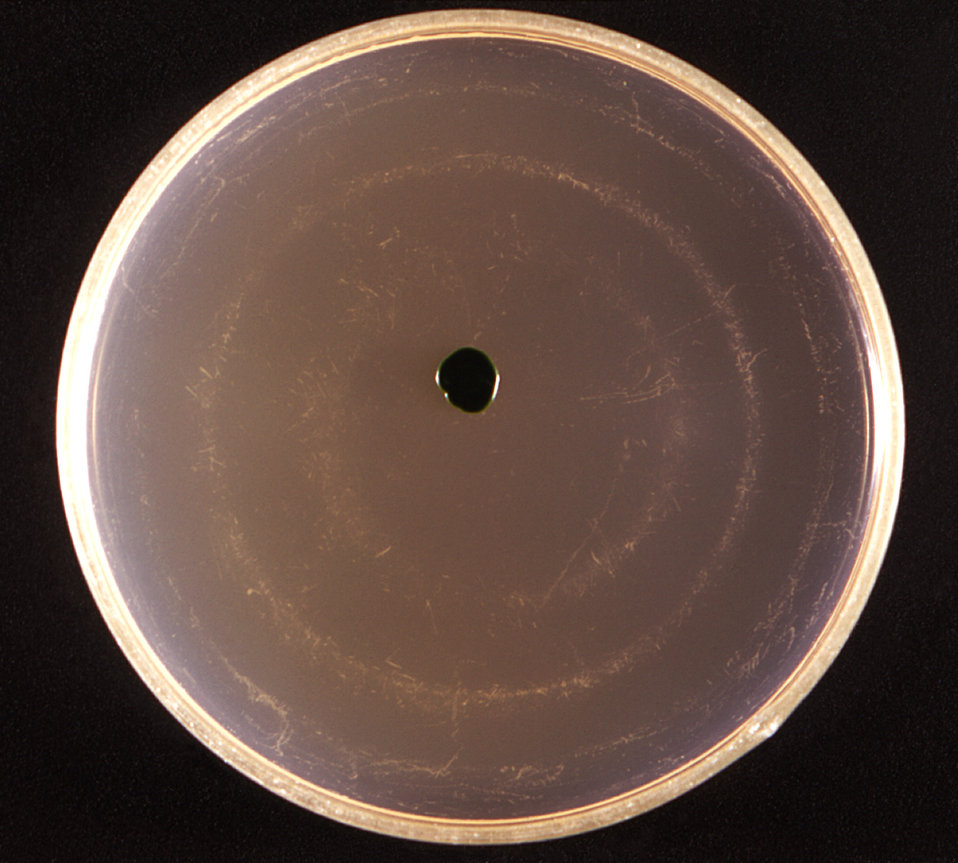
This 1971 image depicted a frontal view of a Petri dish culture in which a small coloney of Chlorella algal organisms had been cultivated.